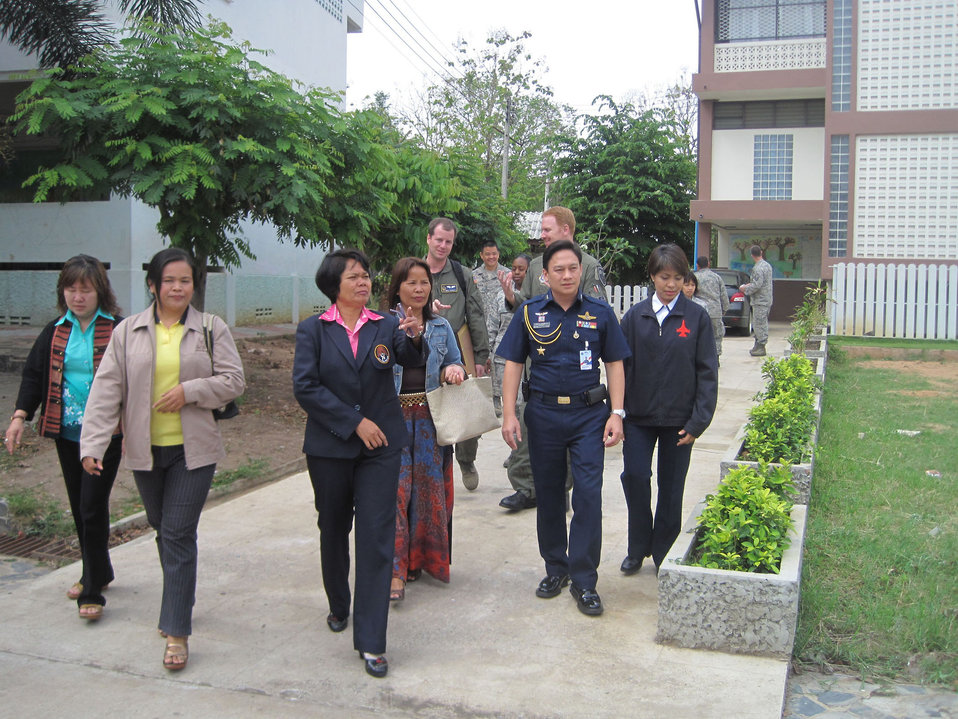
Cope Tiger 2011

U.S. Air Force and Royal Thai Air Force service members discuss students' needs with teachers during a community outreach event March 18, 2011, at a school in Korat, Thailand. The airmen are participating in Exercise Cope Tiger 2011, an annual, multilateral, joint field training exercise being conducted at Korat and Udon Thani Royal Thai Air Bases March 14 through 25.